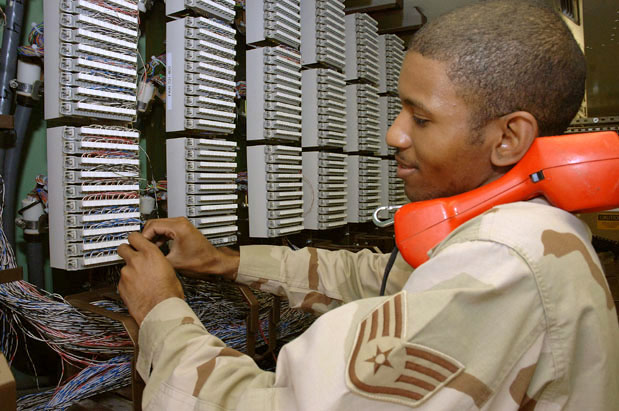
Squadron keeps Airmen in touch with families

Staff Sgt. Tavares Mays checks a telephone switch at Sather Air Base, Iraq, Saturday, March 18, 2006. He is a voice maintenance technician with the 447th Expeditionary Communications Squadron.